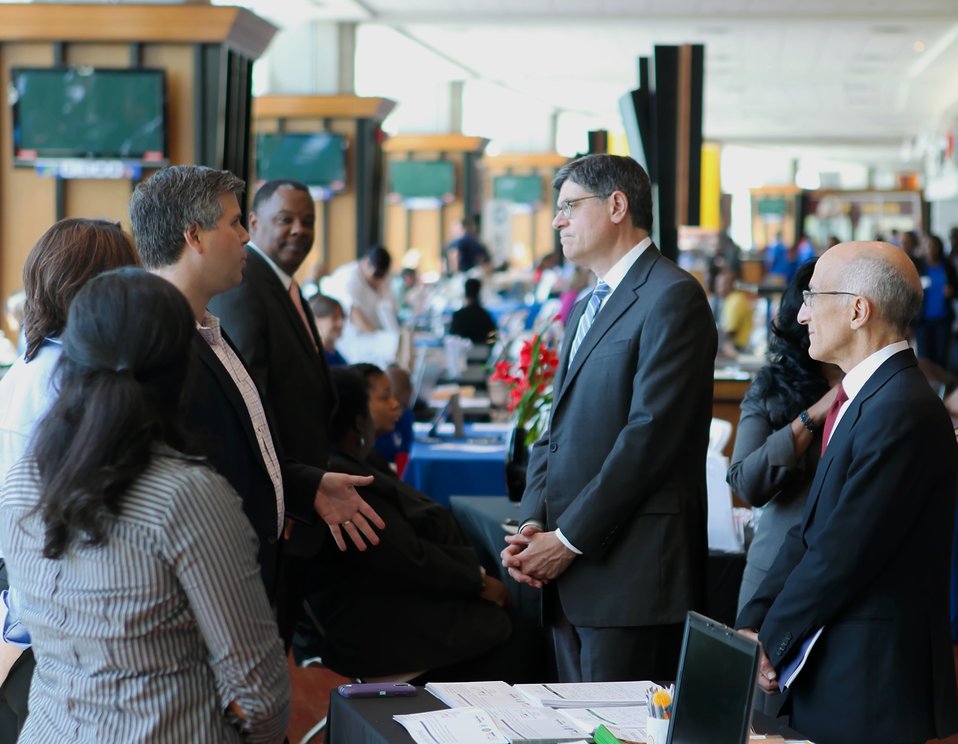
Secretary Lew and Assistant Secretary Massad visit homeowner event

Secretary Lew and Assistant Secretary for Financial Stability attended a Making Home Affordable (MHA) Help for Homeowners event in Landover, Maryland on September 17, 2013